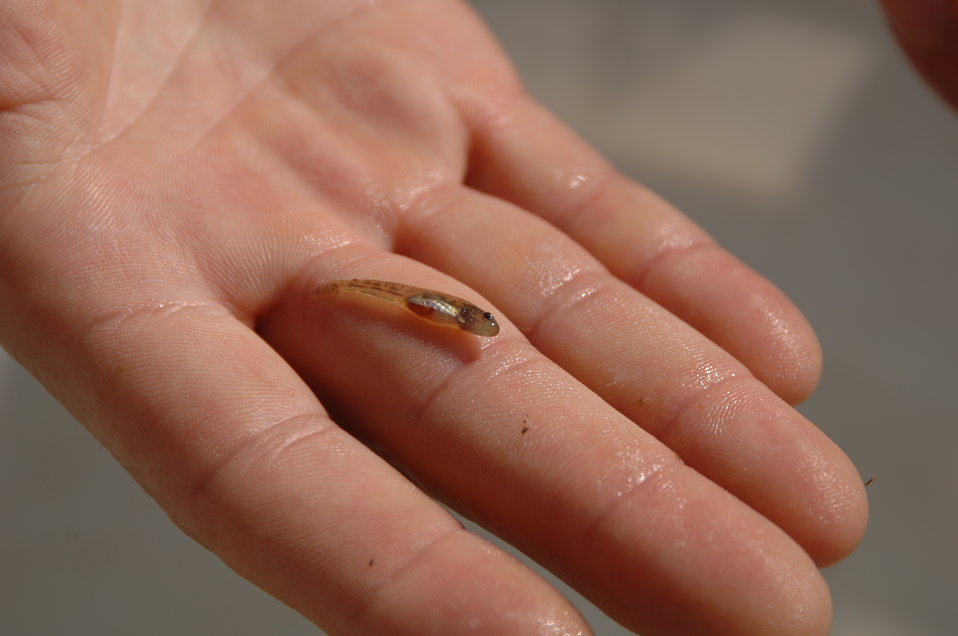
Tidewater Goby in Hand

Prior to the lagoon breach, the U.S. Fish and Wildlife Service went out to survey for the endangered tidewater goby.